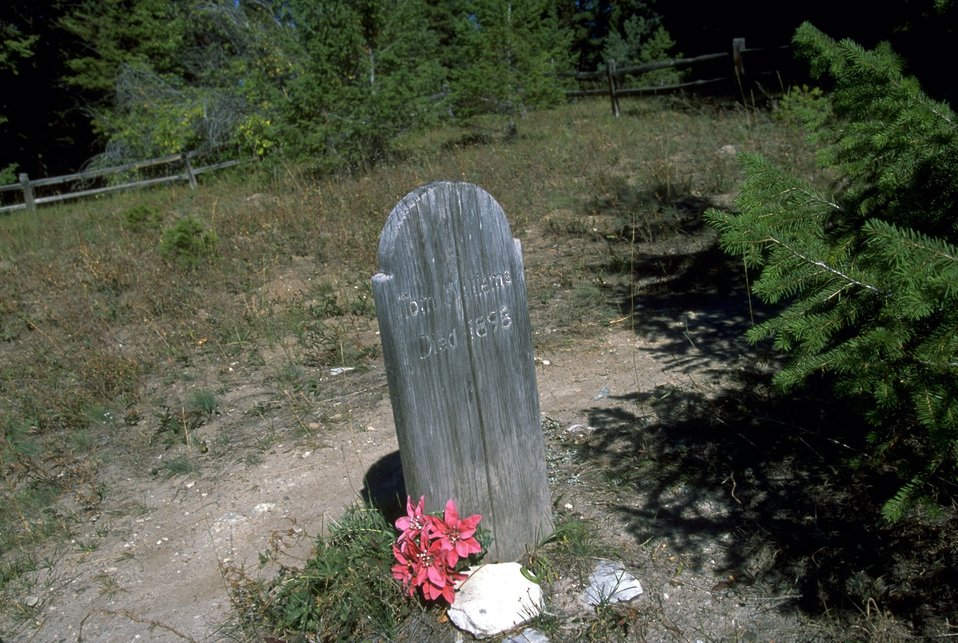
Grave marker at Sand Park cemetery along Garnet Back Country Byway